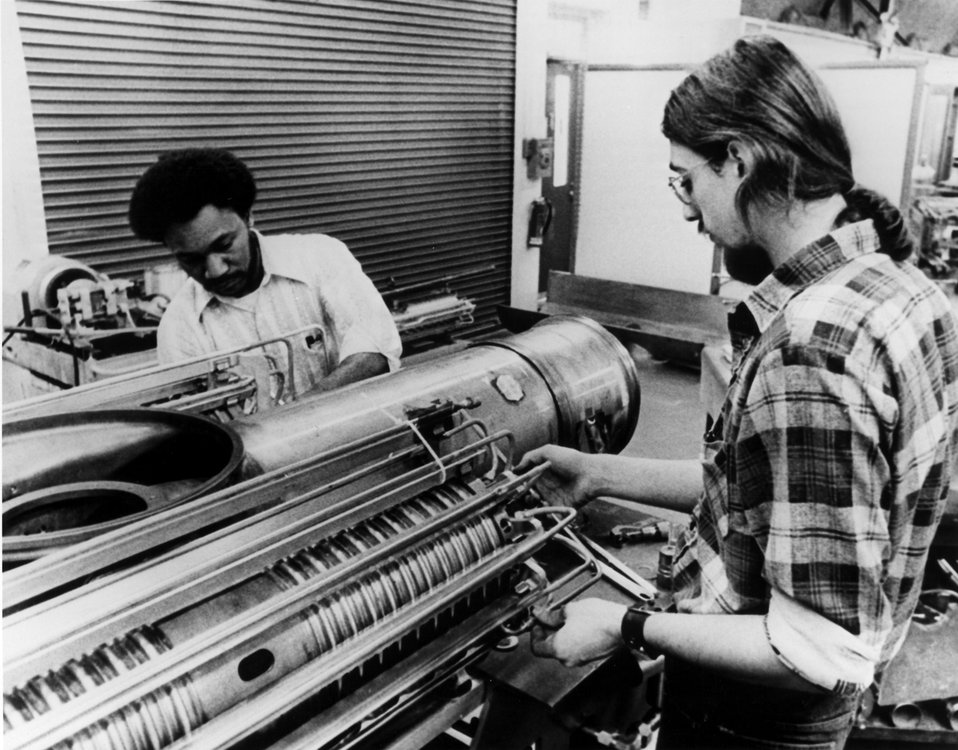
A Booster RF cavity with a prototype Booster tuner at the National Accelerator Laboratory. c. undated